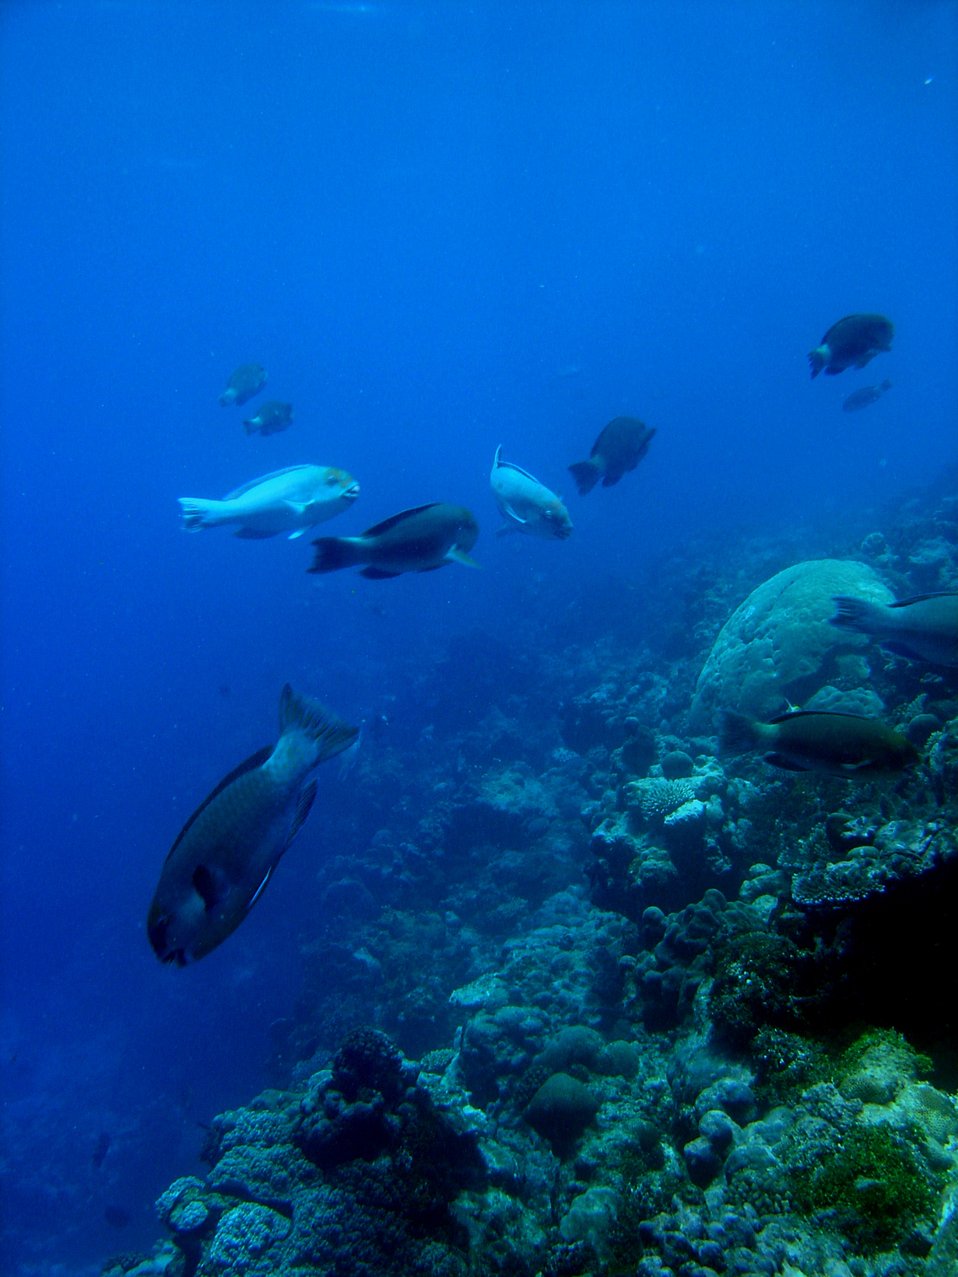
Reef scene with parrotfish.